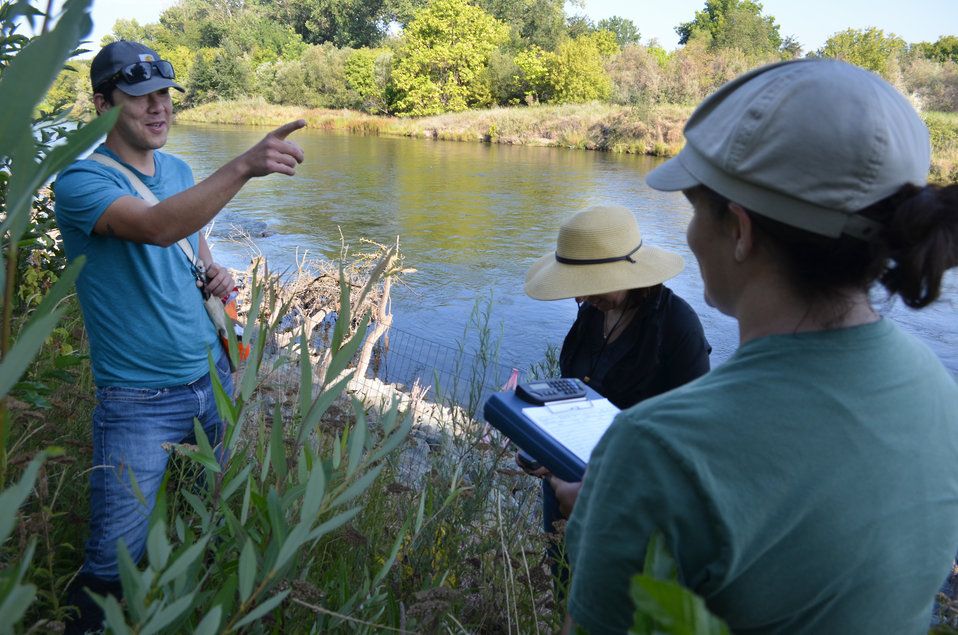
Environmental managers survey last year's plantings

Environmental managers with the U.S. Army Corps of Engineers Sacramento District, (from left) Mike Fong, Natalie Houghton-McNair and Stefanie Adams survey plantings along the lower American River in Sacramento, Calif., July 31, 2013. After repairing riverbank erosion in 2012, the Corps planted native grasses and shrubs to return the site to its natural condition. The work is part of the Corps’ Sacramento River Bank Protection project, and is designed to reestablish riverbank habitat function for endangered fish like salmon and steelhead trout.